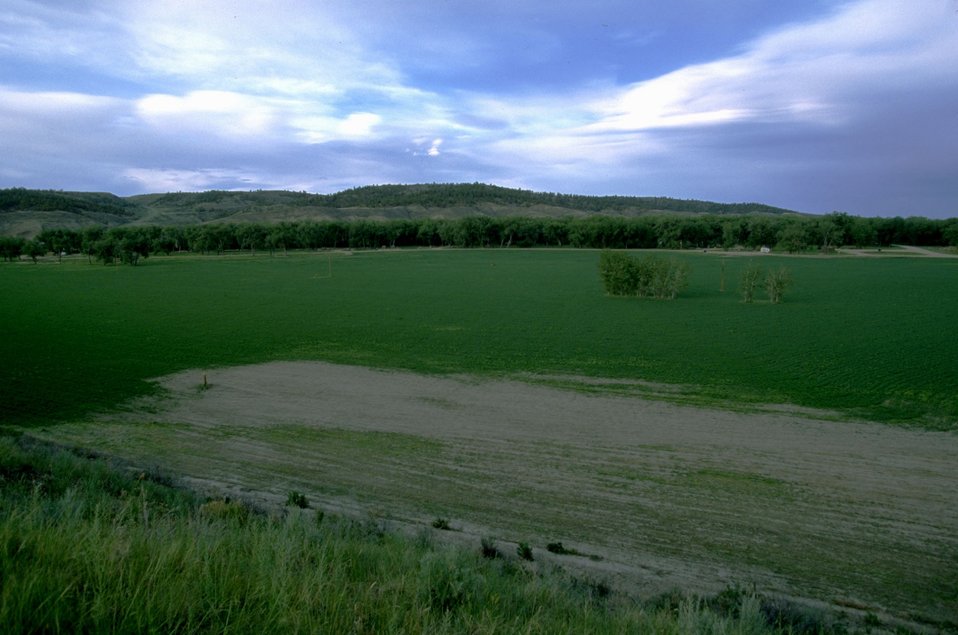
Farmed field looking toward Kipp Recreation Site